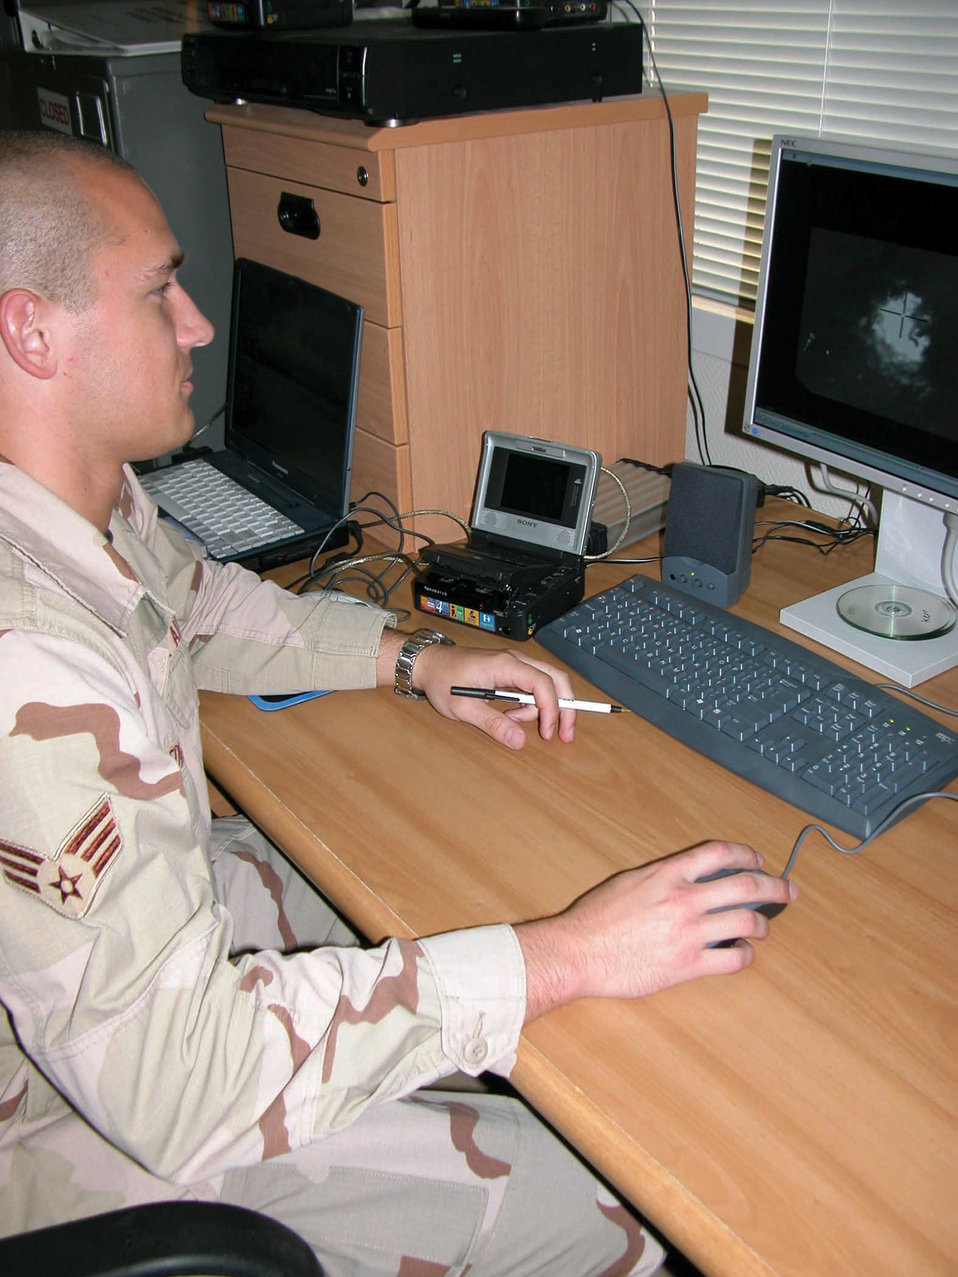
Weapon systems video vital to wartime mission

SOUTHWEST ASIA -- Senior Airman Michael Edwards views weapon systems video taken from an F-15E Strike Eagle mission. Airman Edwards, a graphics artist, packages the videos so evaluators can determine the effectiveness of air strikes. He is deployed from Seymour Johnson Air Force Base, N.C.